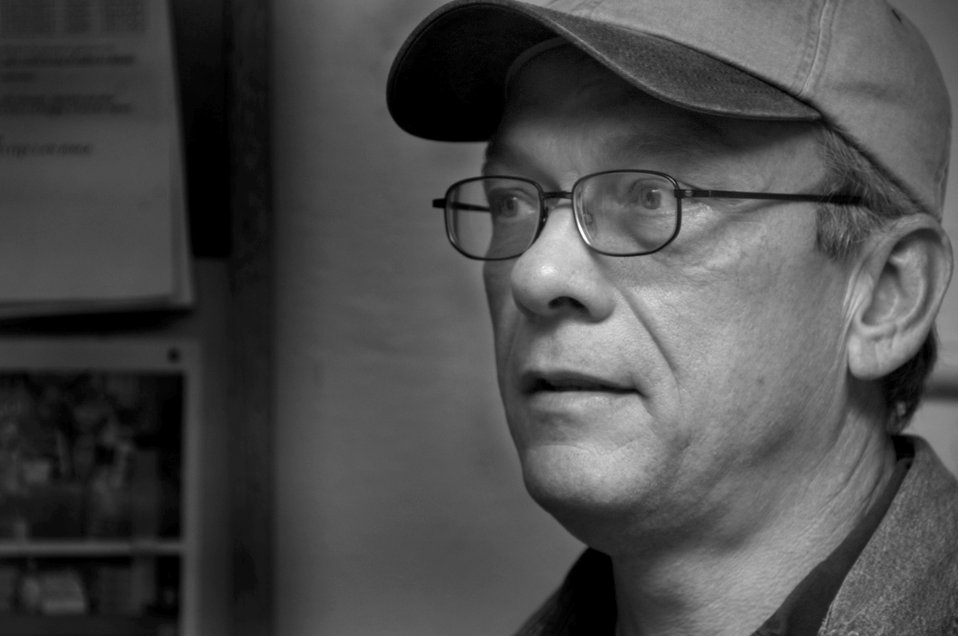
We STILL want you

As of Dec. 21, 2010, Steven Comstock, a homeless veteran, has lived at the Cornerstone Rescue Mission in Rapid City, S.D., for three months, trying to get back on his feet. There are more than 800 homeless people in Rapid City alone.